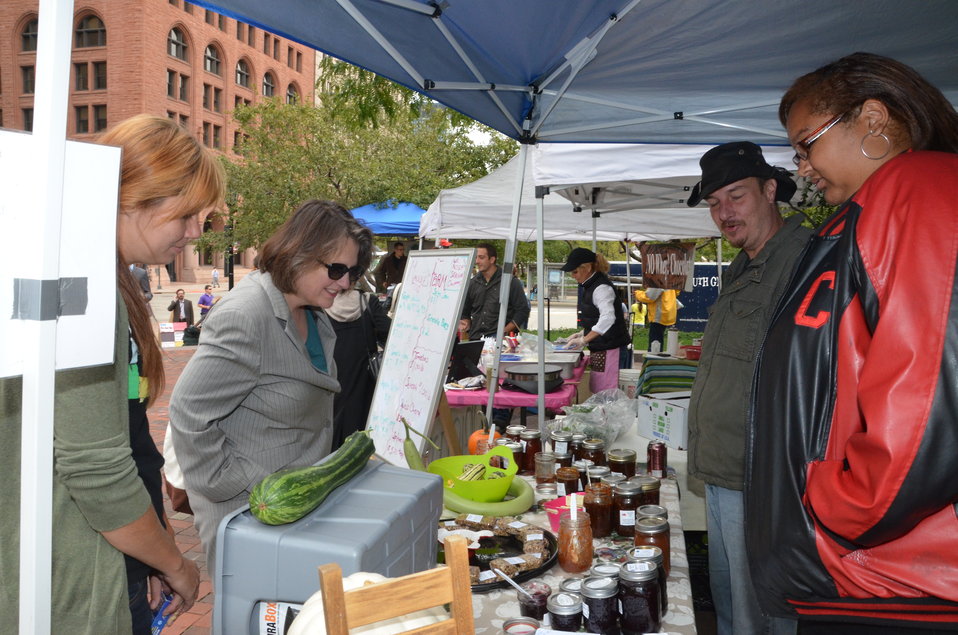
Agriculture Deputy Secretary Kathleen Merrigan (second from left), visits with vendors at Cleveland, Ohio's Downtown Farmers' Market at Public Square on Sept. 21, 2012.